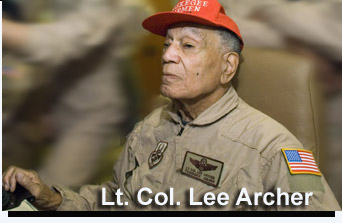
Lt. Col. Lee Archer

Retired Lt. Col. Lee Archer visited Joint Base Balad, Iraq,with other Tuskegee Airmen to observe operations. The 332nd Air Expeditionary Wing traces its heritage to the Tuskegee Airmen's 332nd Fighter Group.